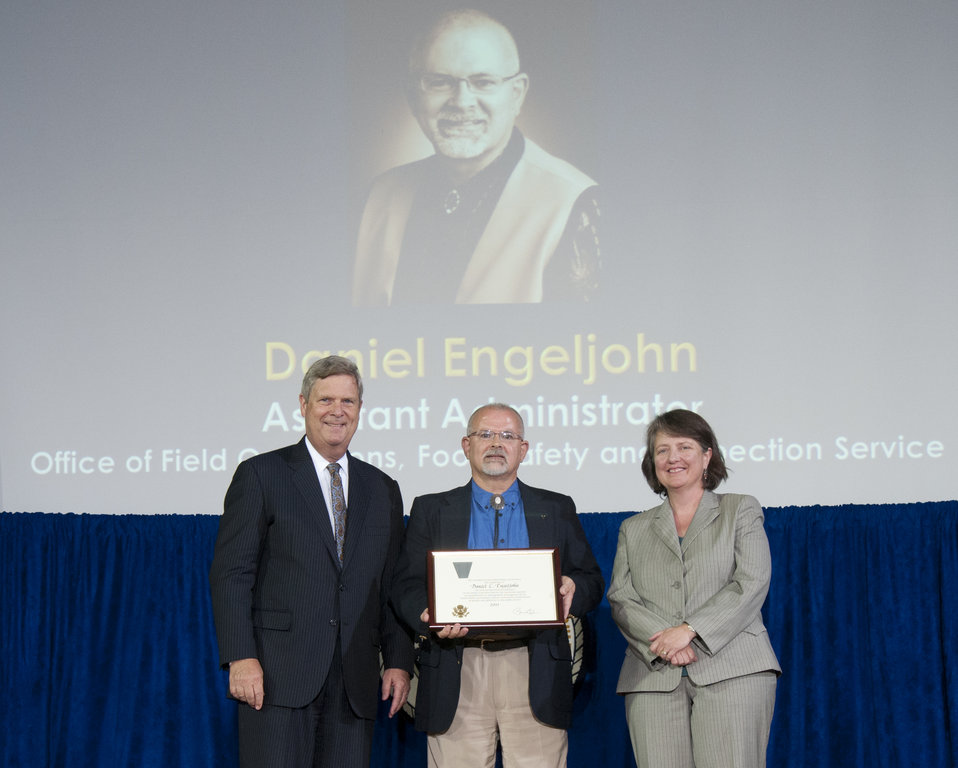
Agriculture Secretary Tom Vilsack and Agriculture Deputy Secretary Kathleen Merrigan present the Meritorious Executive Award to Food Safety Inspection Service (FSIS) Office of Field Operations Assistant Administrator Daniel Engeljohn the U.S. Department of Agriculture (USDA) 64th Annual Honor Awards Ceremony in Washington, D.C. on Wednesday, Sept. 12, 2012. The Meritorious Executive award in the Senior Executive Service is for sustained superior accomplishment in management of programs of the U.S. Government and for noteworthy achievement of quality and proficiency in the public service.